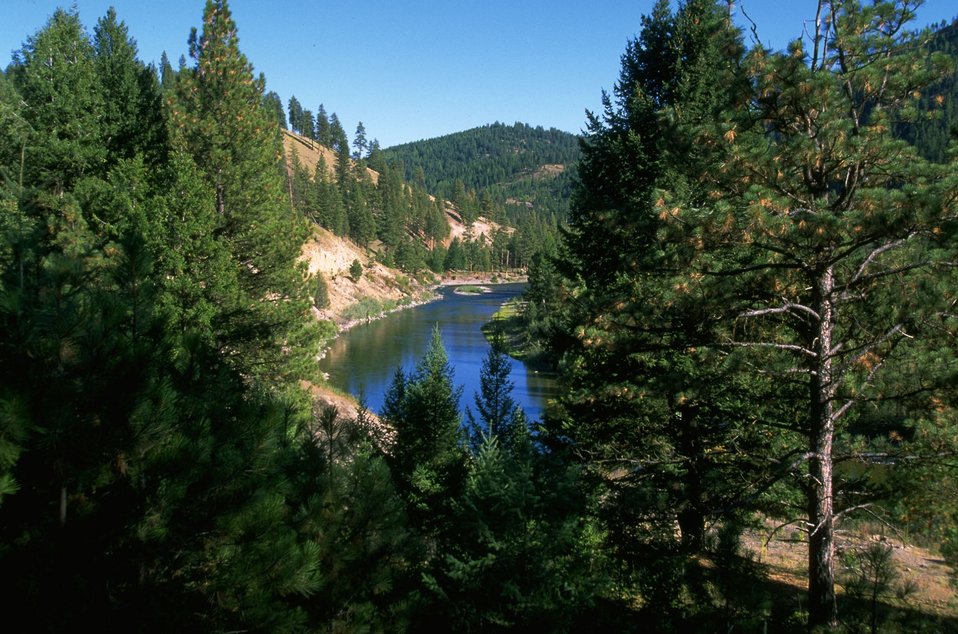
Forest view along the Blackfoot River